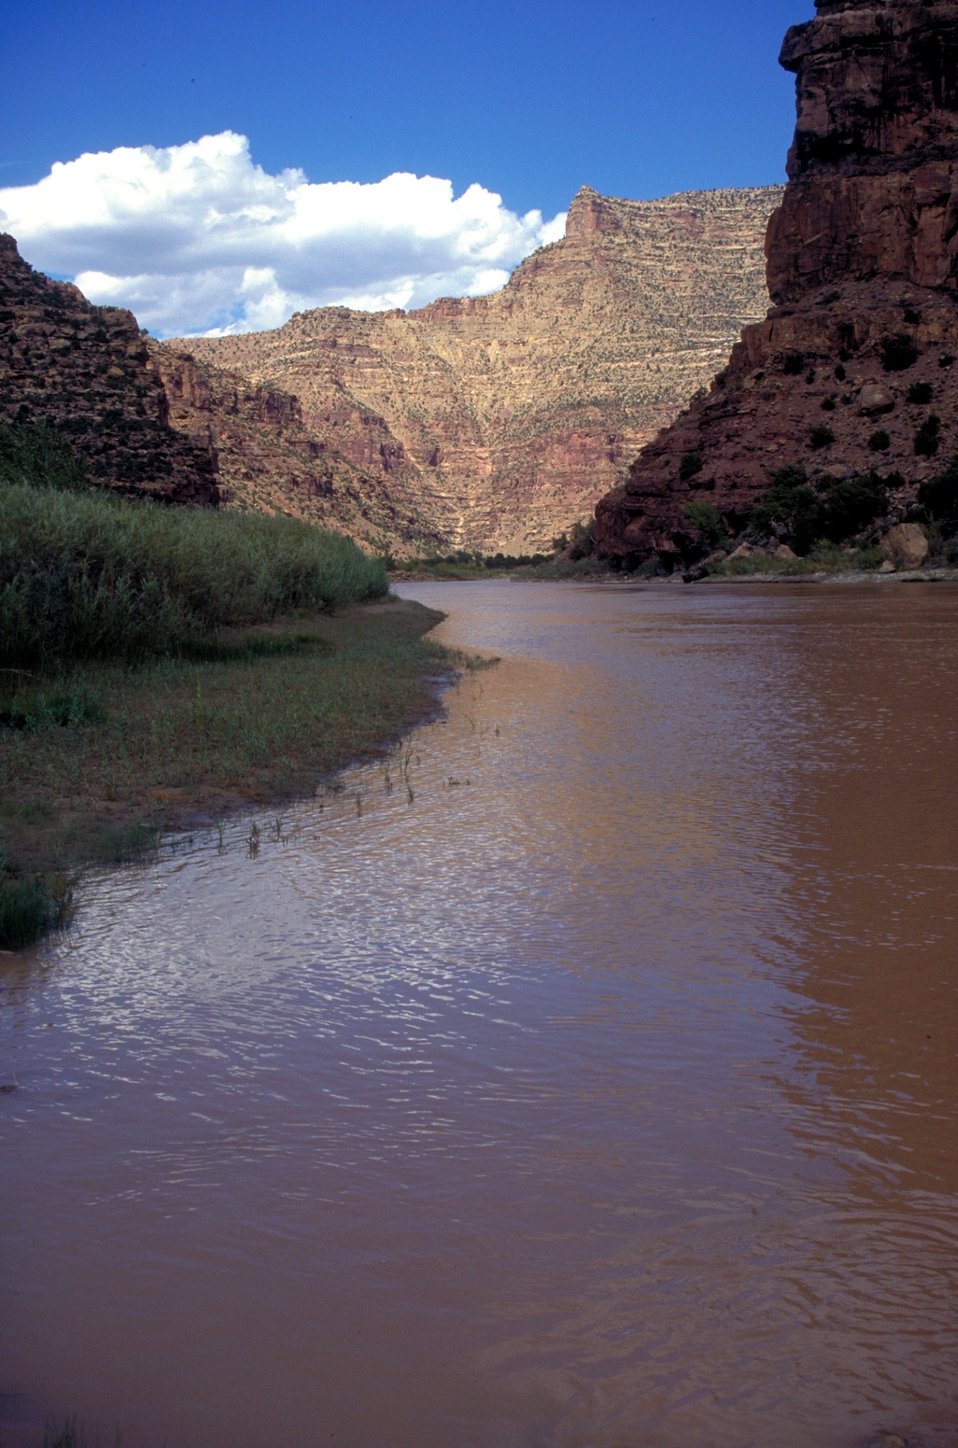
Desolation/Gray Canyons near Price, Utah.